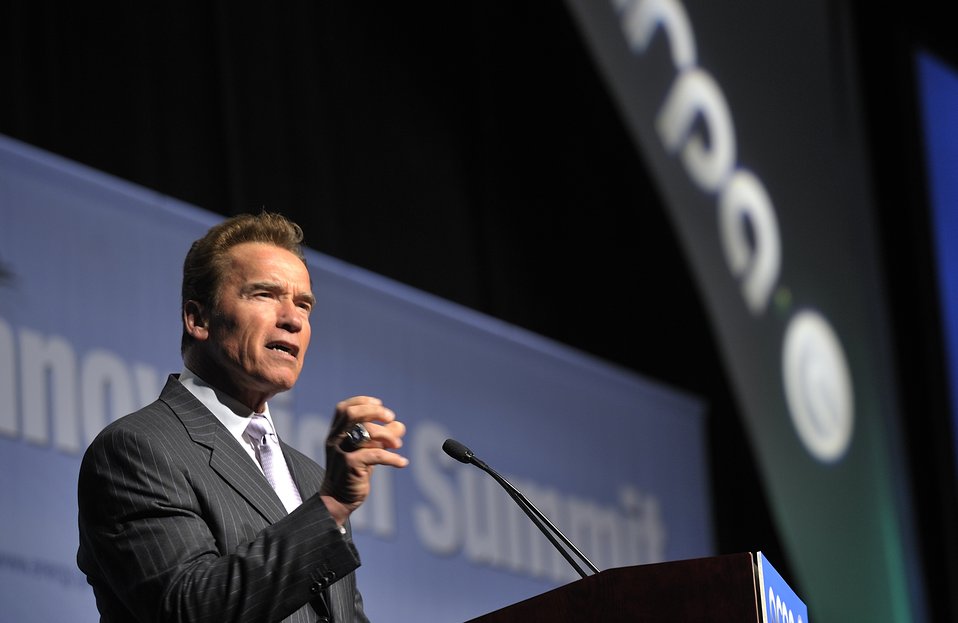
ARPA-E Energy Innovation Summit 2011, 18 of 83

Arnold Schwarzenegger, Former Governor of California.